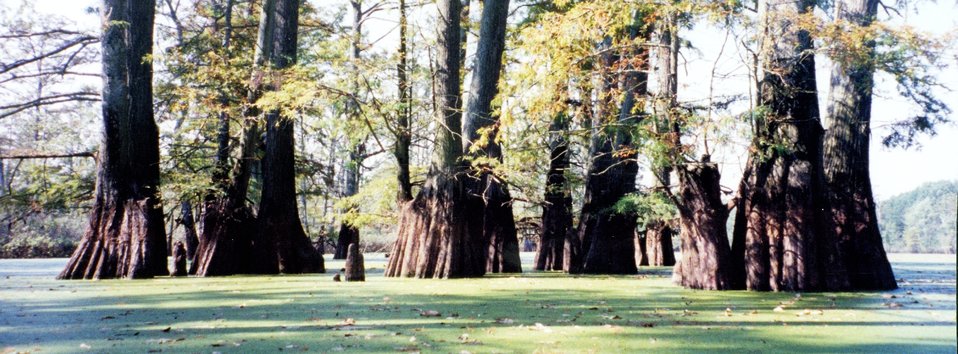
Cypress trees in a North Carolina swamp area.